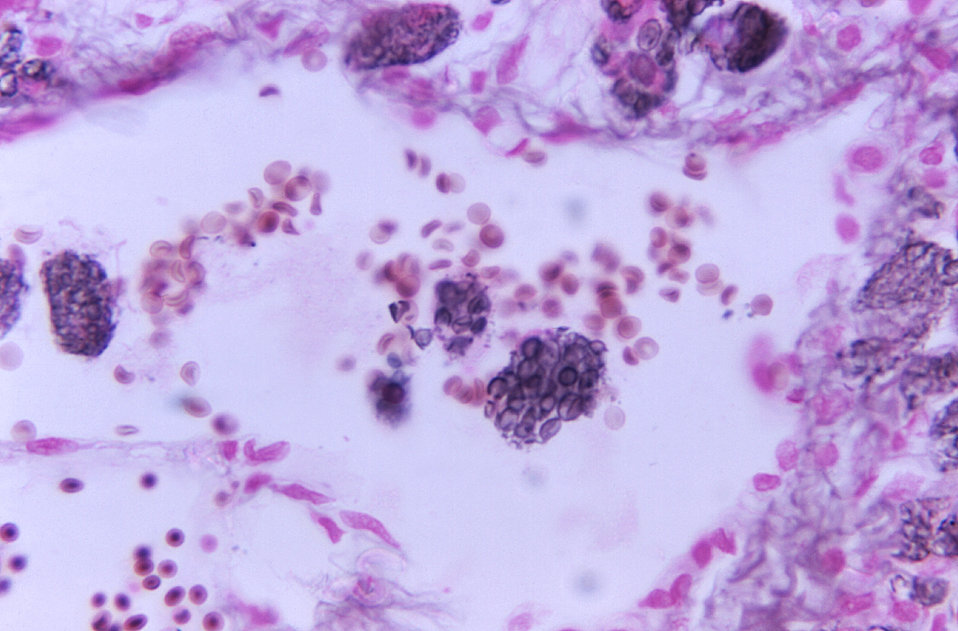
Under a magnification of 800X, this methenamine silver-stained photomicrograph of a lung lesion tissue specimen, revealed some of the cytoarchitectural morphology associated with the disease cryptococcosis due to the infiltration of Cryptococcus. sp. fungal organisms.